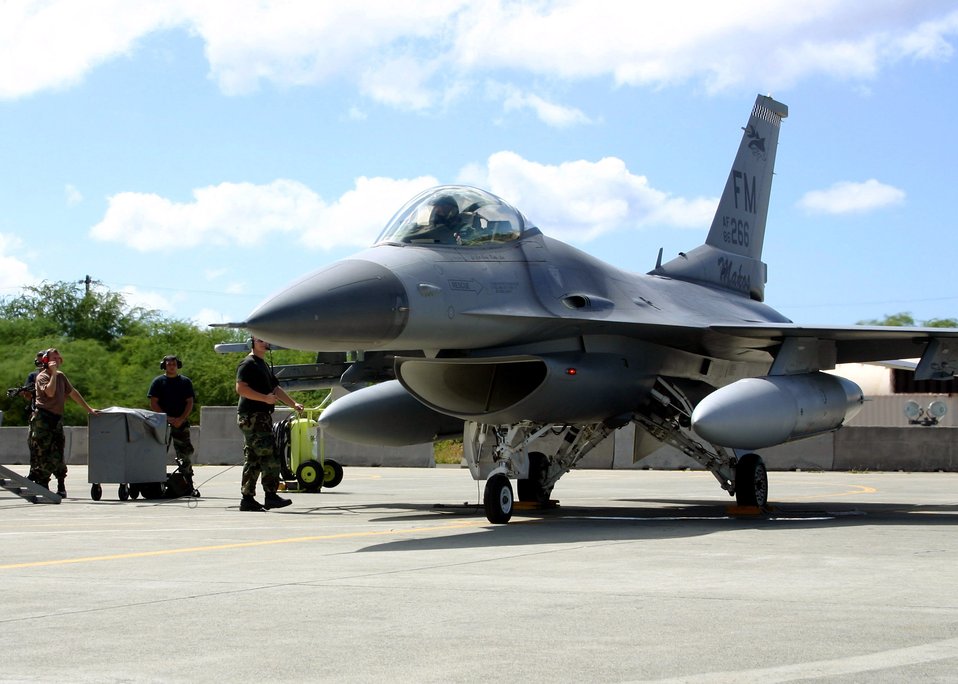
F-16 crashes in Gulf of Mexico

An F-16 Fighting Falcon like this one crashed Jan. 15 in the Gulf of Mexico. The pilot ejected safely and was rescued. The aircraft was from the 93rd Fighter Squadron from Homestead Air Reserve Base, Fla.